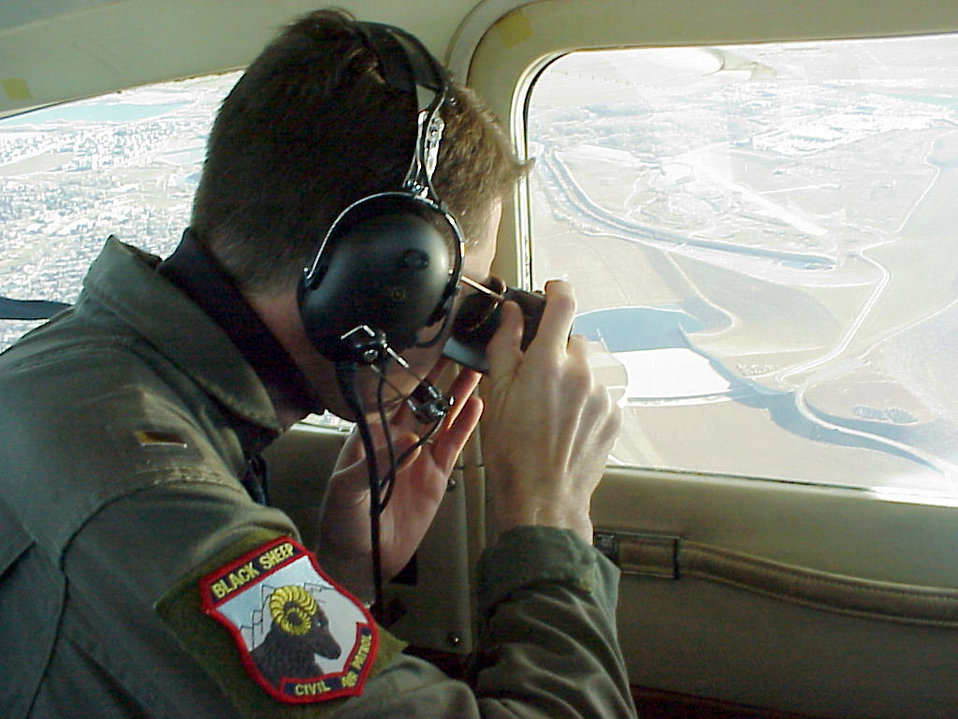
Eye in the sky

OVER COLORADO -- First Lt. Chad Morris of the Civil Air Patrol's Colorado wing photographs a sports utility vehicle from 1,000 feet during a homeland security mission simulation. After receiving a rough location, Morris and his crew established Global Positioning System coordinates, flew to the spot and started the search for the